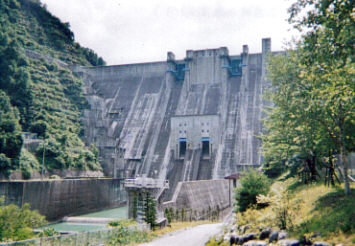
Dam